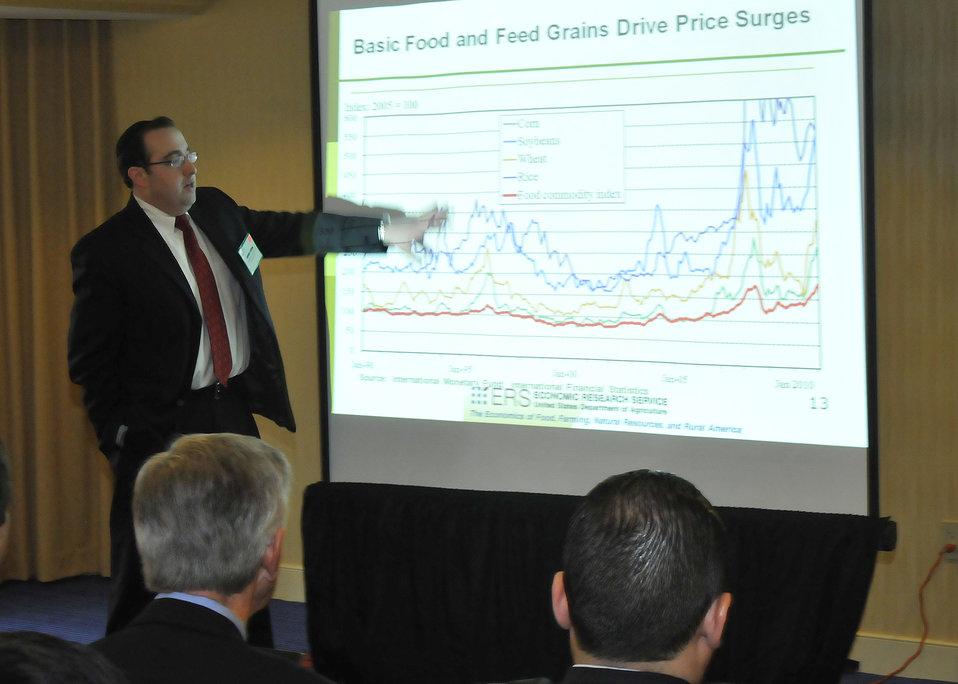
Ephraim Leibtag, PhD., Deputy Director for Research Foods and Economics Division, Economic Research Service explains food prices and retail food markets during the “Food Price Outlook Special Session” during the World Agricultural Outlook Board Forum in Crystal City, VA, Thursday, February 24, 2011.